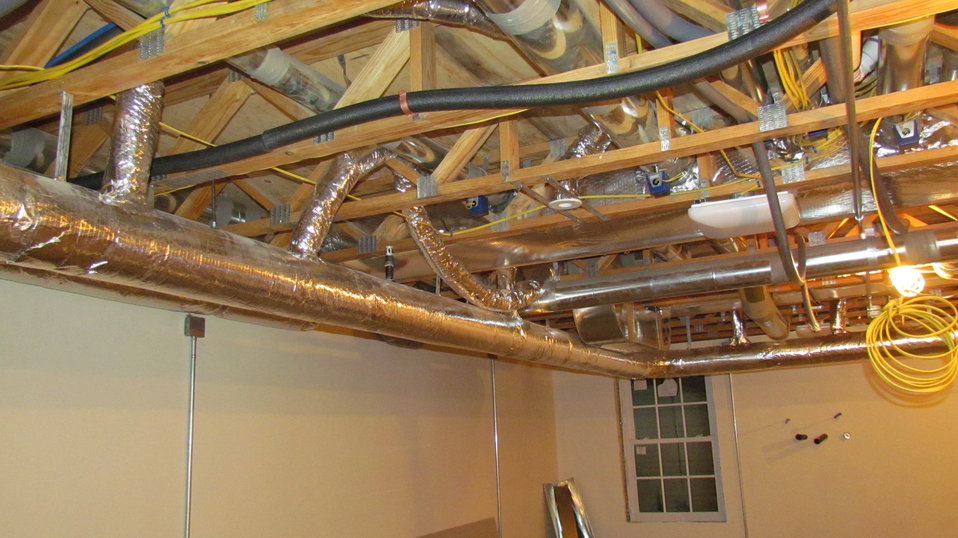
Main duct line in basement that supplies individual smaller duct runs for the high velocity air distribution system.